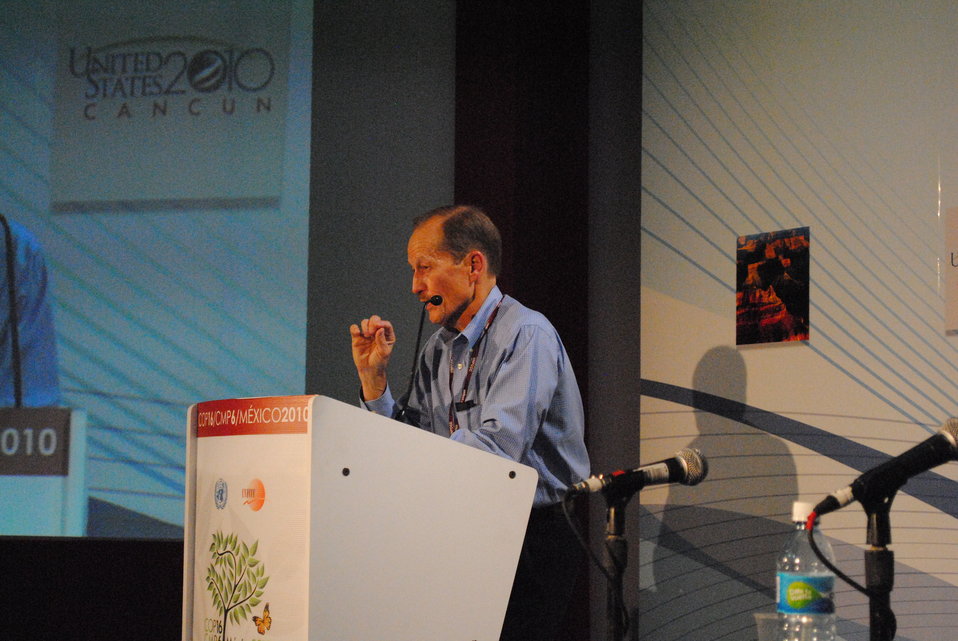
Dr. Cleaves Demonstrates How the U.S. Forest Service Is Integrating Climate Change Into its Management and Operations

Dr. David Cleaves, a Climate Change Advisor to the Chief of the U.S. Forest Service, presents the side event, 'Adaptation and Sustainable Management for the U.S. Forests,' at the U.S. Center at COP-16 in Cancun, Mexico, on November 30, 2010.